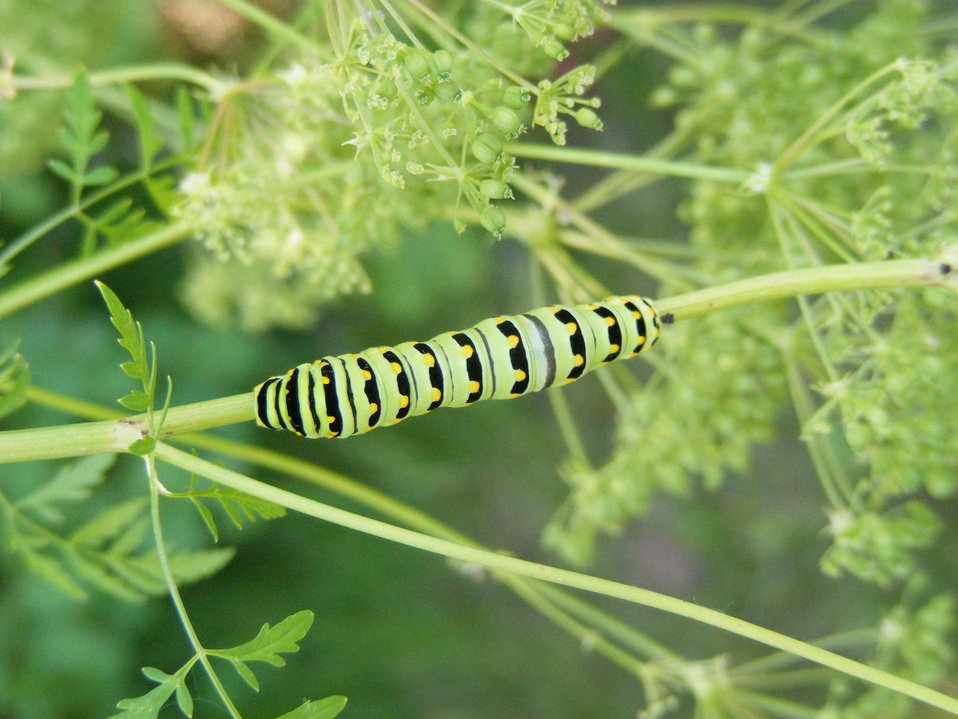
Green Beauty

A black swallowtail caterpillar (Pupilio polyxenes asterius) hides among the green foliage at Waubay National Wildlife Refuge.

Photo Credit: Laura Hubers / USFWS

Photo Contest Entry #135